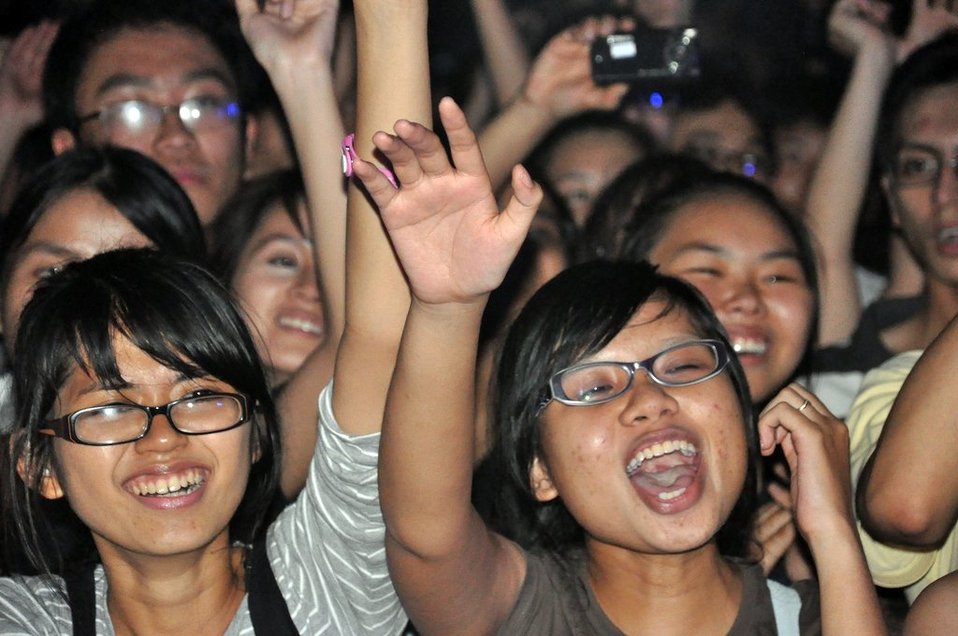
USAID, MTV EXIT concert series in Vietnam, 2010.

Fans of international and Vietnamese music stars enjoy concerts as part of the anti-trafficking in persons awarness concerts in Vietnam.